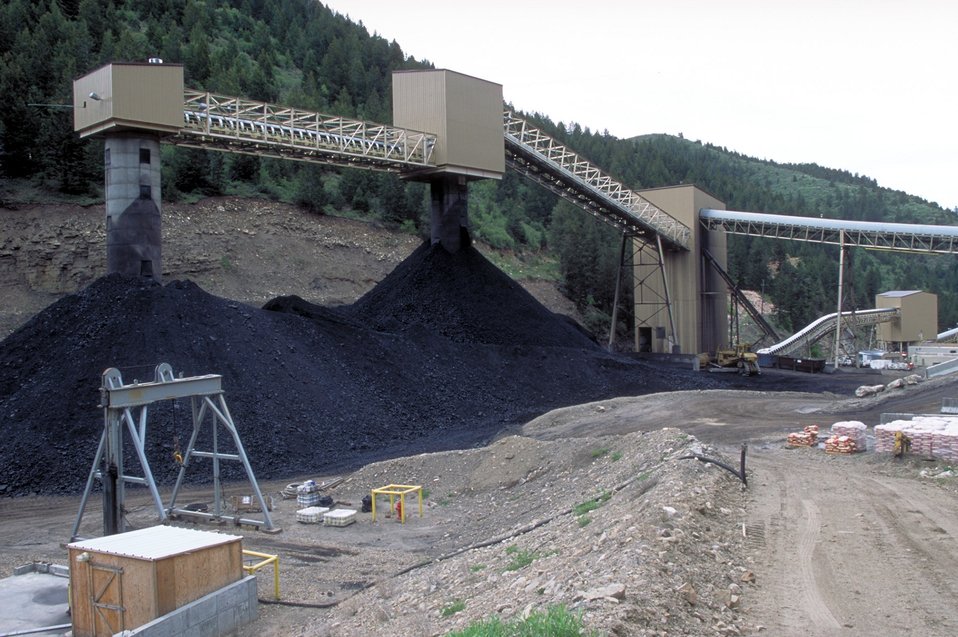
Coal production near Price, Utah.